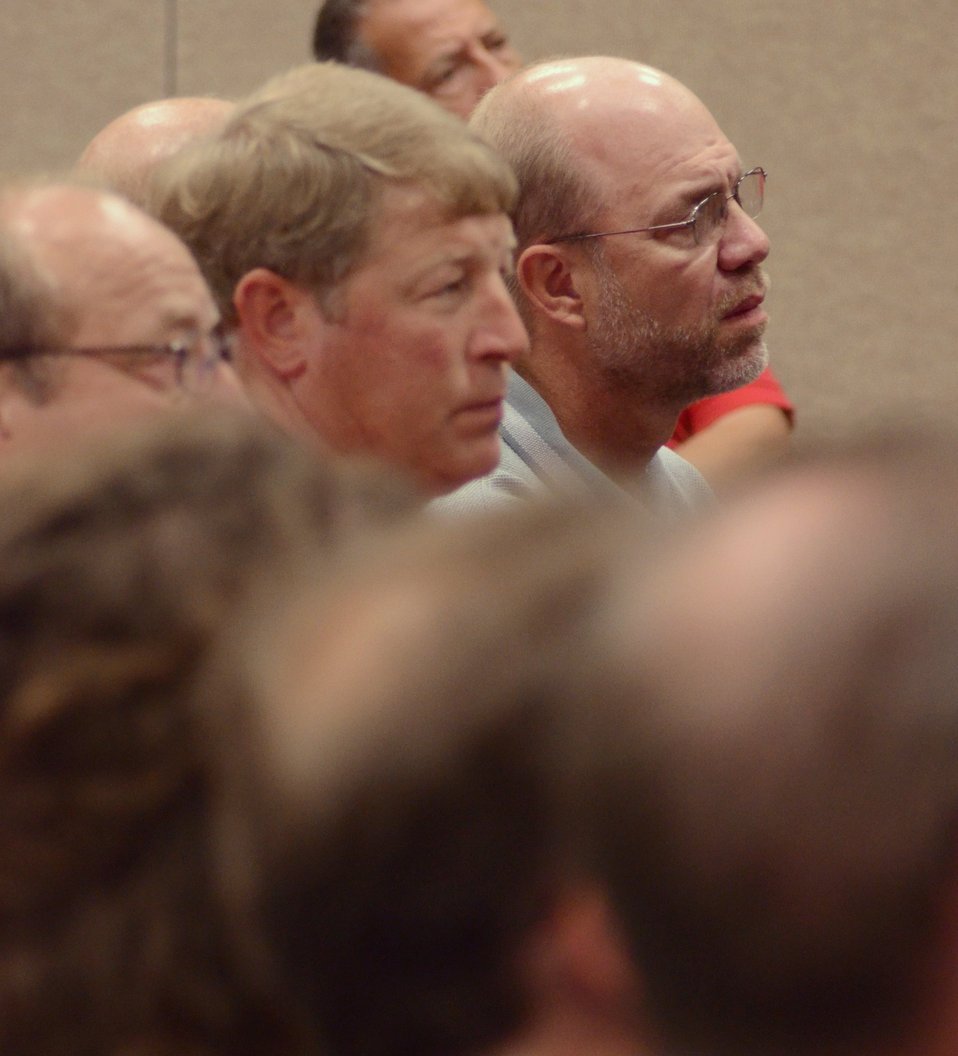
Members of the audience listen to Agriculture Secretary Tom Vilsack speaks at the White House Rural Forum at the Wisconsin State Fair, in West Allis, WI, on Thursday, August 4, 2011, to businesses and community leaders, farmers and ranchers to explore ways federal, state and local officials can work together to improve economic conditions and create jobs. The forum is part of a series of White House Rural Roundtables that are being held across the country this summer with senior Administration officials.